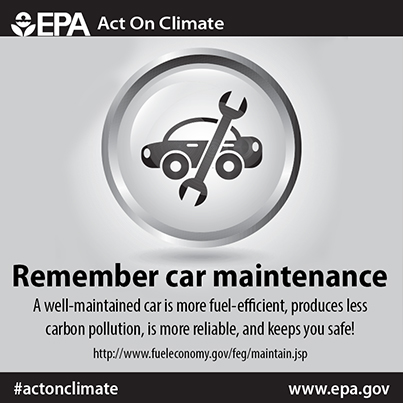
Remember car maintenance. A well-maintained car is more fuel efficient and produces less carbon pollution! #ActOnClimate www.epa.gov/earthday/actonclimate/